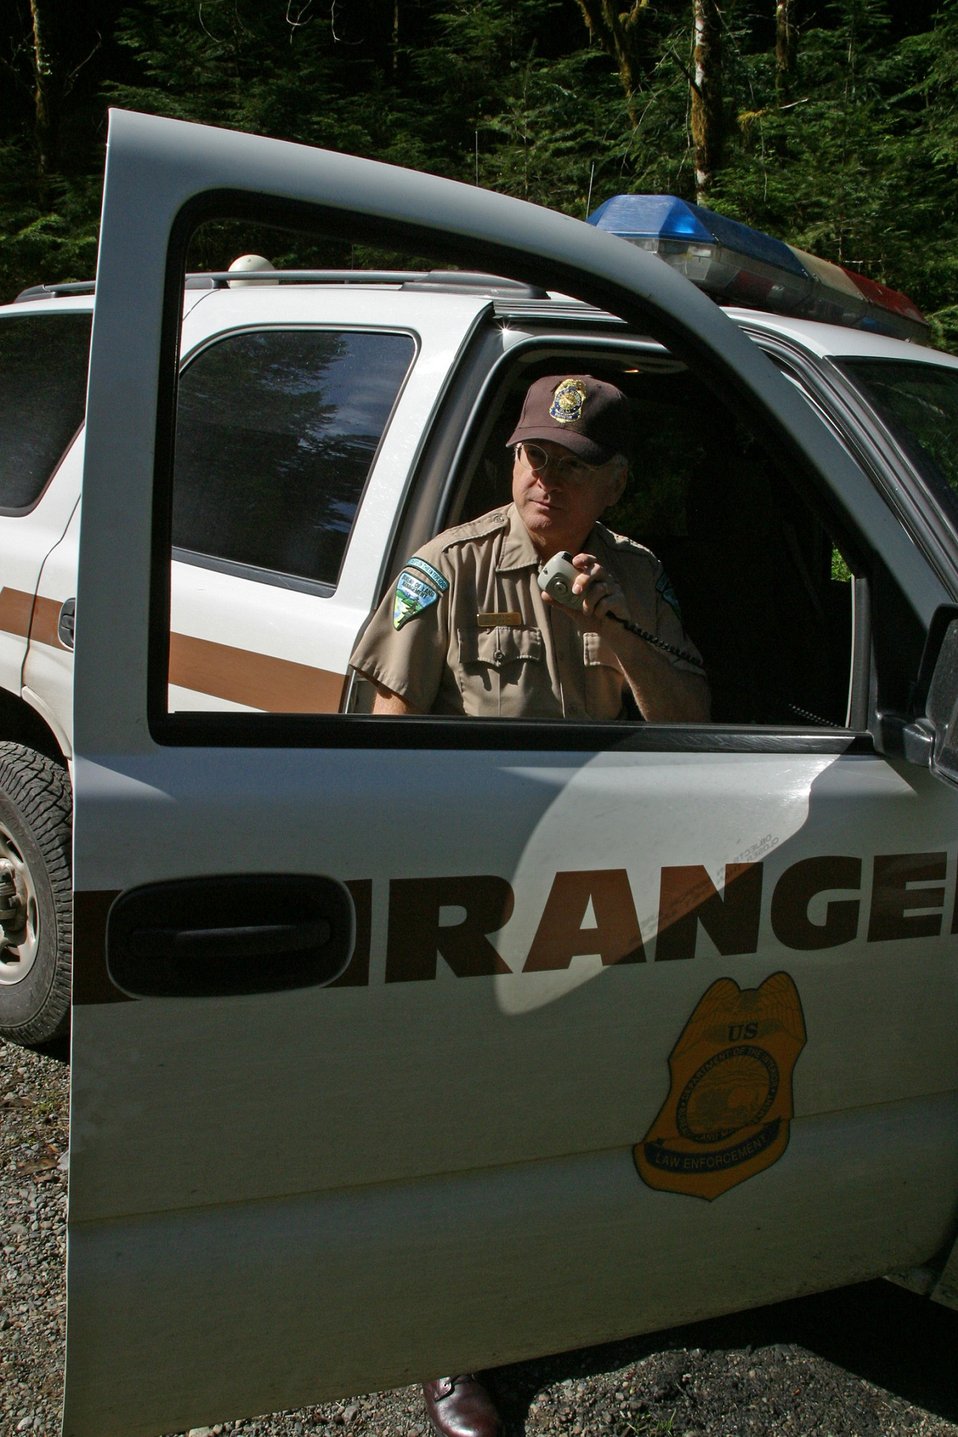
Dennis Daraghy, BLM Salem District Ranger checks in with the District Office.